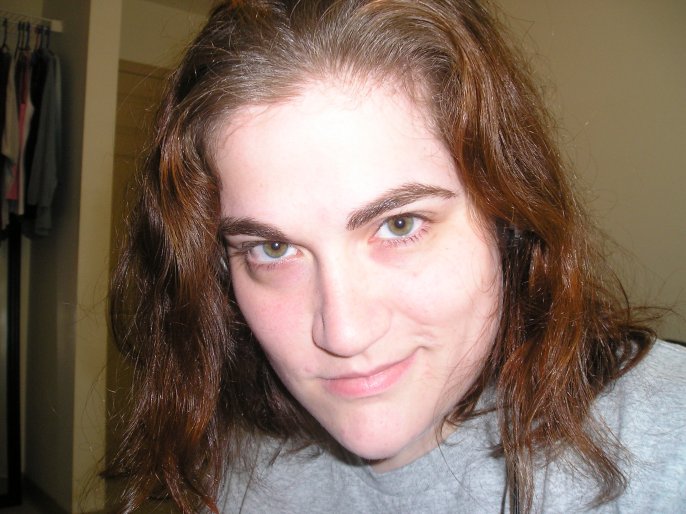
A picture of Cyndi in her dorm room at Gordon College, taken on April 5, 2007.